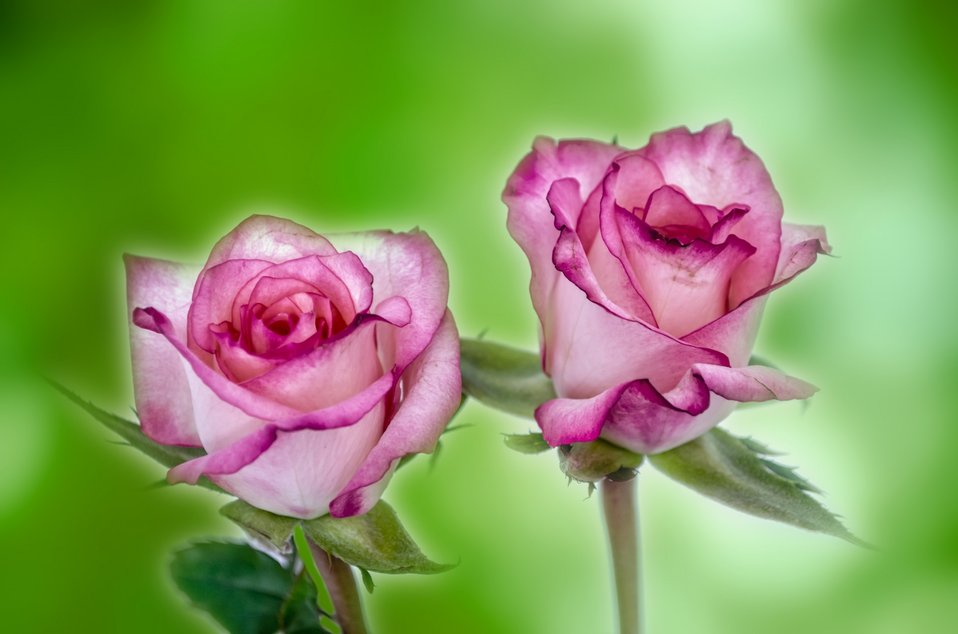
Flowers

Flower - red rose.